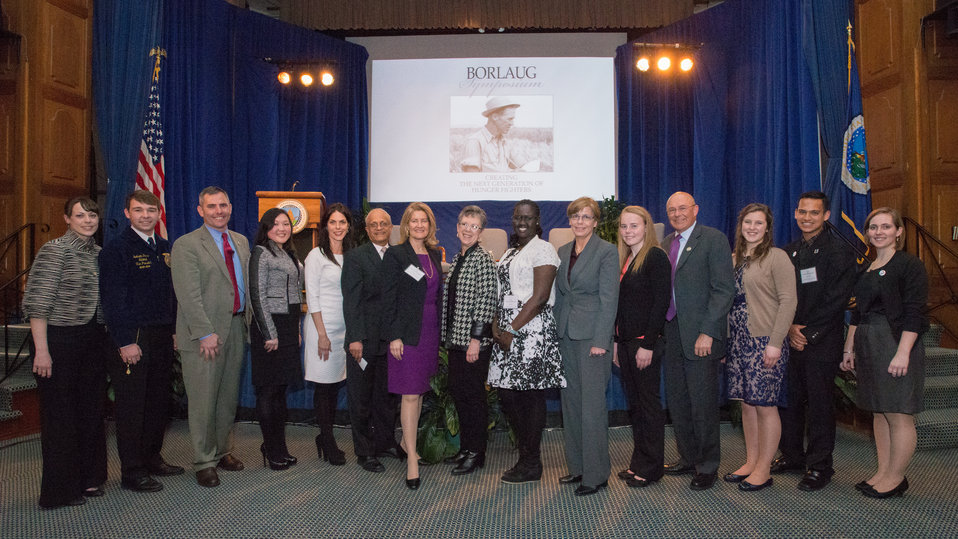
Speakers, moderators, presenters, and panelists at the Borlaug Symposium commemorating the late Dr. Norman E. Borlaug's 100th Birthday hosted by the U.S. Department of Agriculture (USDA) in the Jefferson Auditorium of USDA in Washington, D.C., on Tuesday, Mar. 25, 2014. The symposium highlighted current efforts addressing global hunger. The symposium panels features high school and university students, as well as, scientists and policy advisors from the U.S. Agency for International Development (USAID), USDA and NGOs. Questions from students and interns were given priority to panelists. Lightening presentations had leading students and individuals present what they are doing to help achieve Dr. Borlaug’s vision of creating the next generation of hunger fighters.